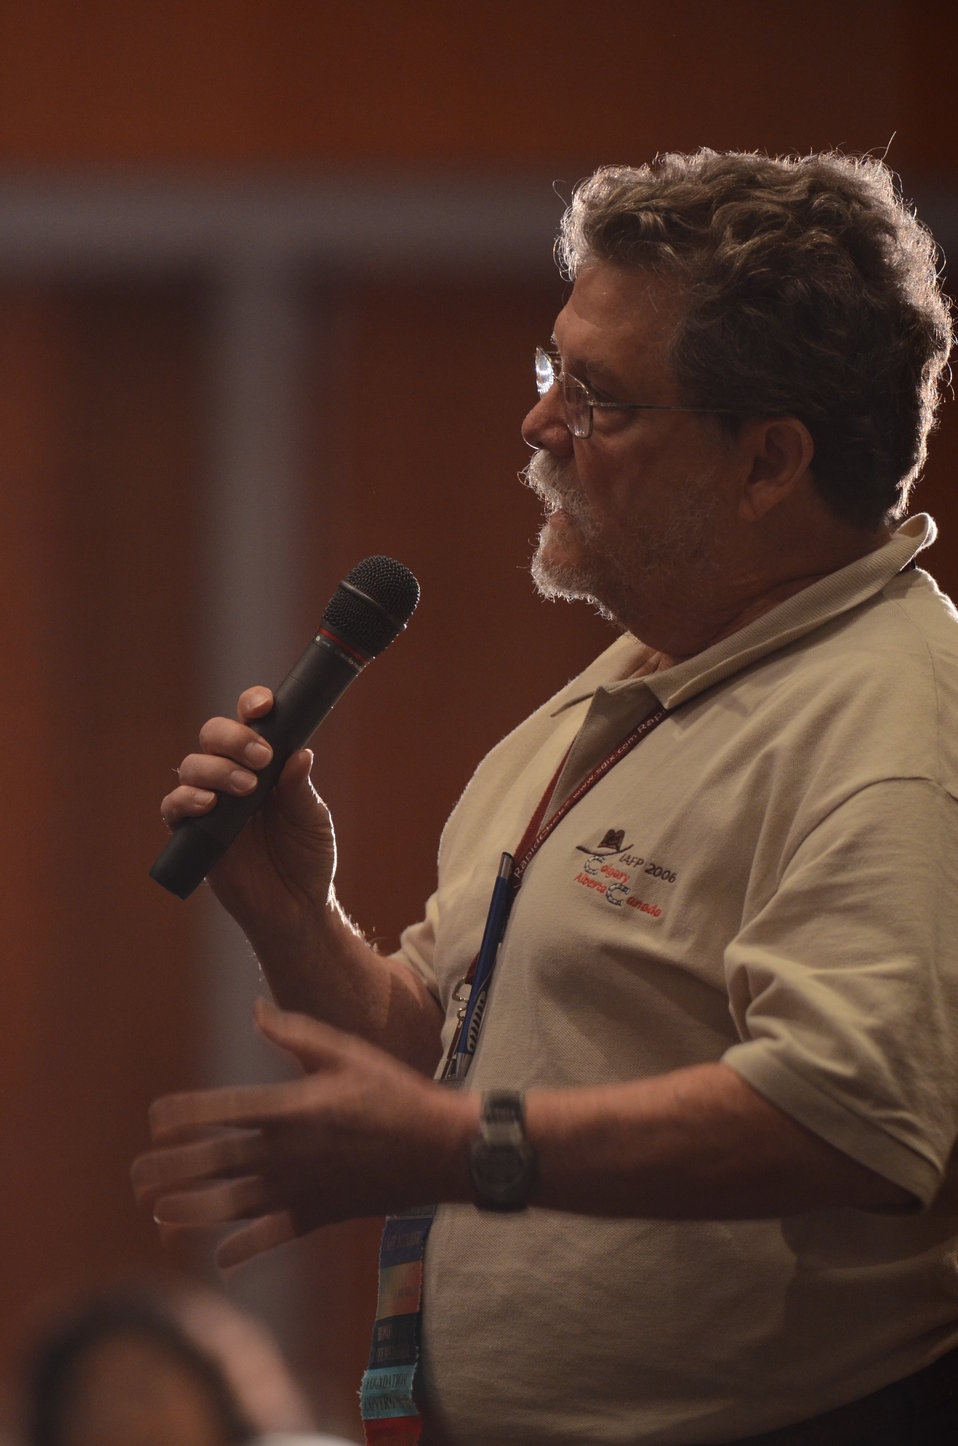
Carl Custer asks Agriculture Secretary Tom Vilsack a question at the International Association for Food Protection (IAPP) 100th annual meeting in Milwaukee, WI, on Wednesday, August 3, 2011. IAPP is committed to providing members worldwide with a forum to exchange information on protecting the global food supply.